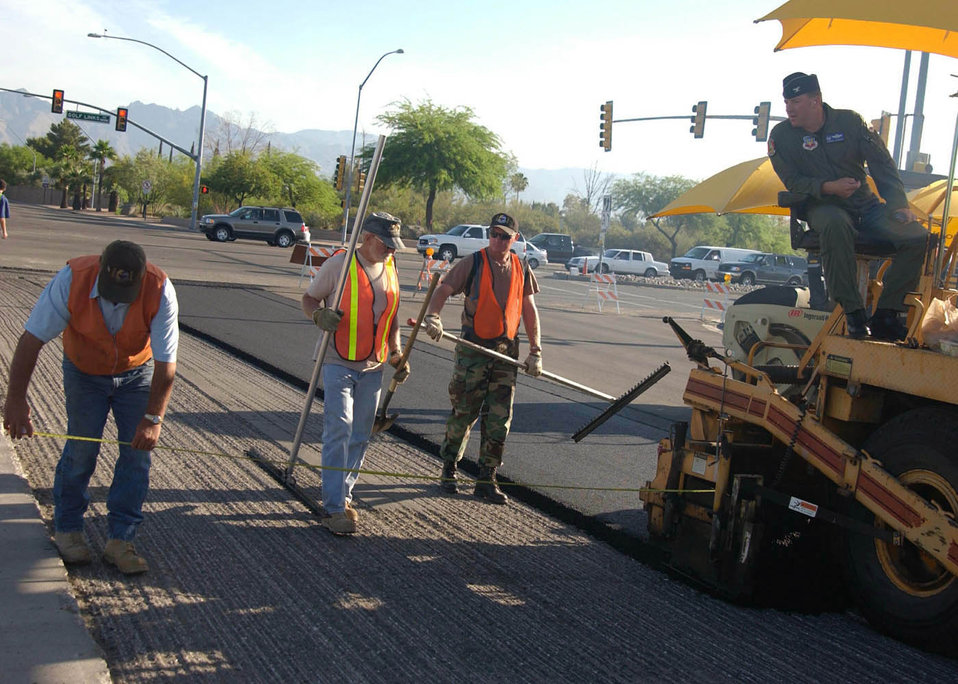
Pavement pounders

DAVIS-MONTHAN AIR FORCE BASE, Ariz. -- Col. Michael Spencer (right) and contractors with the 355th Civil Engineer Squadron use an asphalt lay-down machine to pave a new entrance to a gate here. Colonel Spencer is the 355th Wing commander.